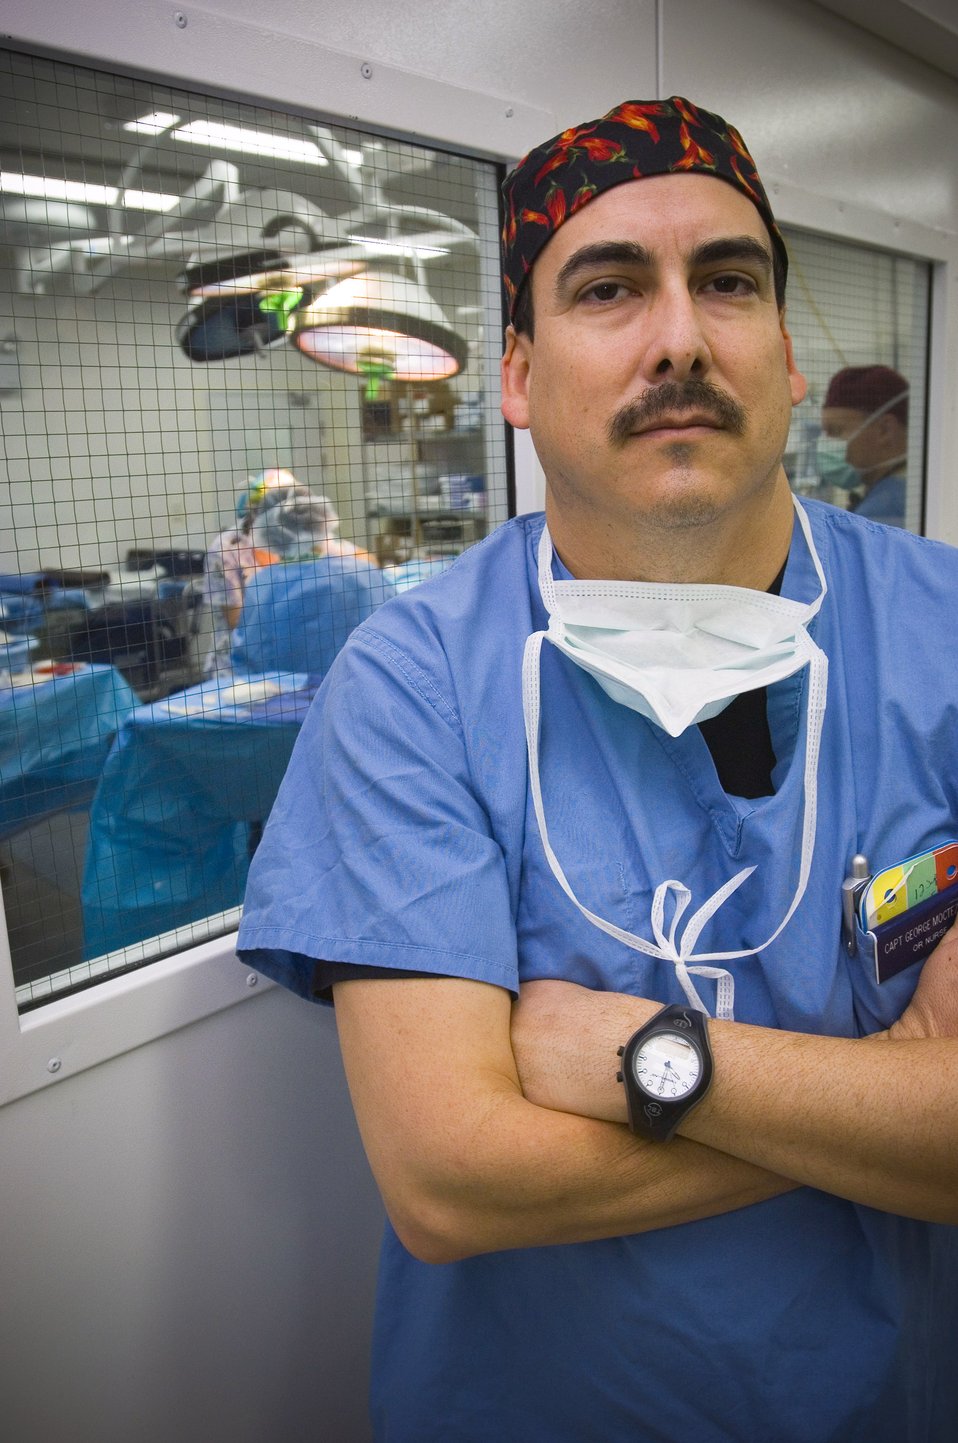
Combat Nurses: The OR --PART 2

Capt. George Moctezuma, an operating room nurse, prepares to scrub a wounded patient before a surgical procedure at the Air Force Theater Hospital here. Captain Moctezuma received his degree in nursing as an enlisted medic and worked as a civilian nurse in his off-duty time before earning his commission. He is deployed from Wilford Hall Medical Center, San Antonio, Texas.